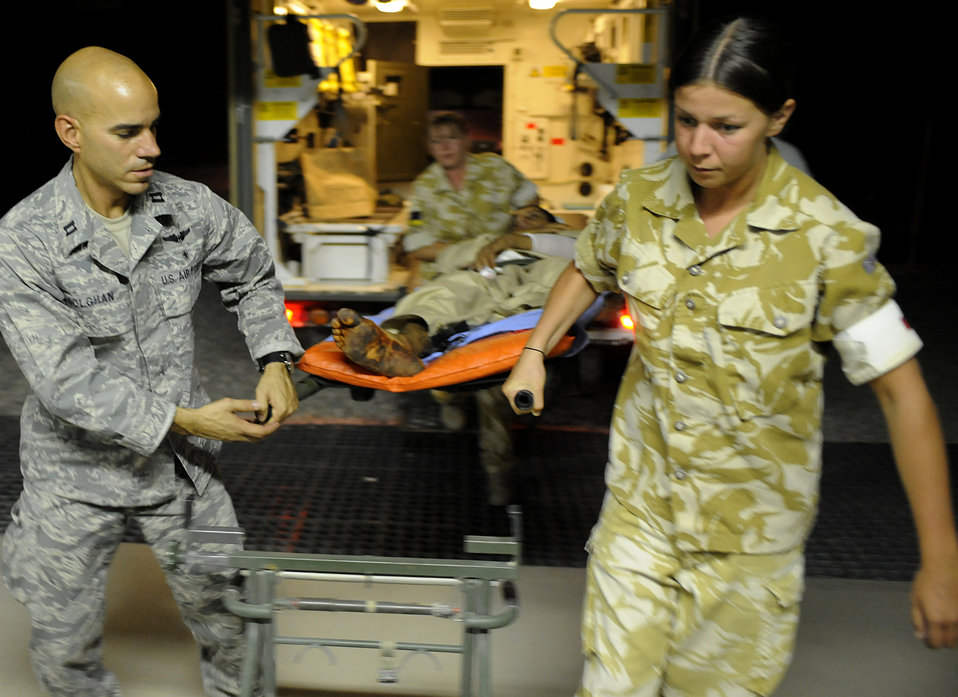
Airmen coordinate smooth transition of wounded to higher medical care

Capt. Jac Solghan and British Soldiers carry an Afghan boy who is returning home after weeks of care and rehabilitation by U.S. and Afghan medical personnel June 23 at Camp Bastion, Afghanistan. The boy lost his leg when a landmine exploded as he was walking along a road. Captain Solghan is the Aeromedical Evacuation Liaison Team flight clinical coordinator.